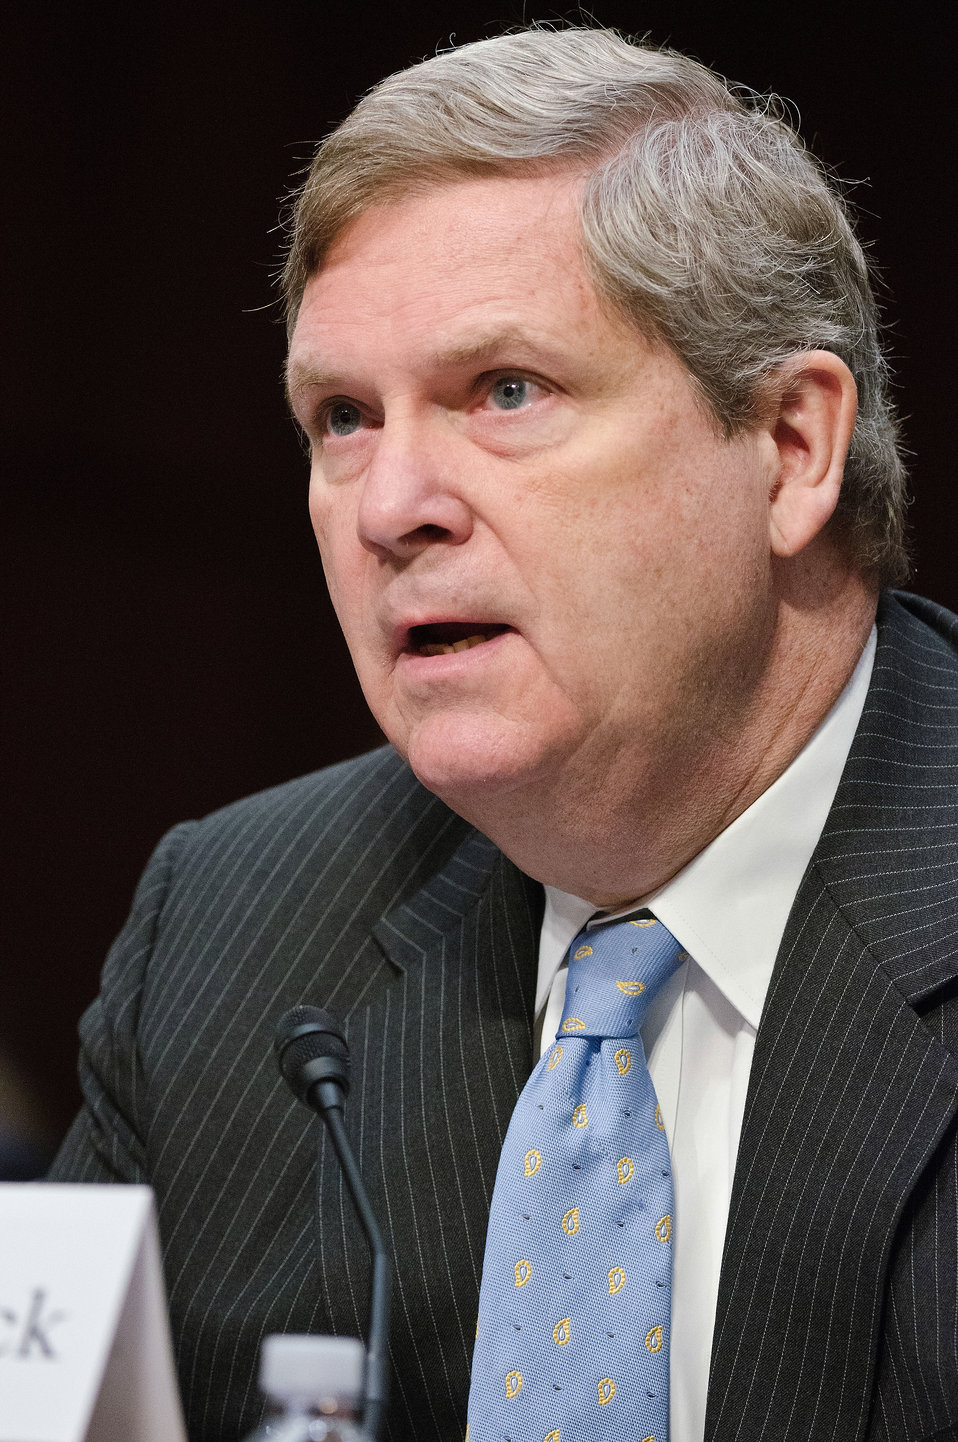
Agriculture Secretary Tom Vilsack testified on “Healthy Food Initiatives, Local Production and Nutrition” before the Senate Agriculture Committee on Wednesday, March 7, 2012 in Washington, D.C.